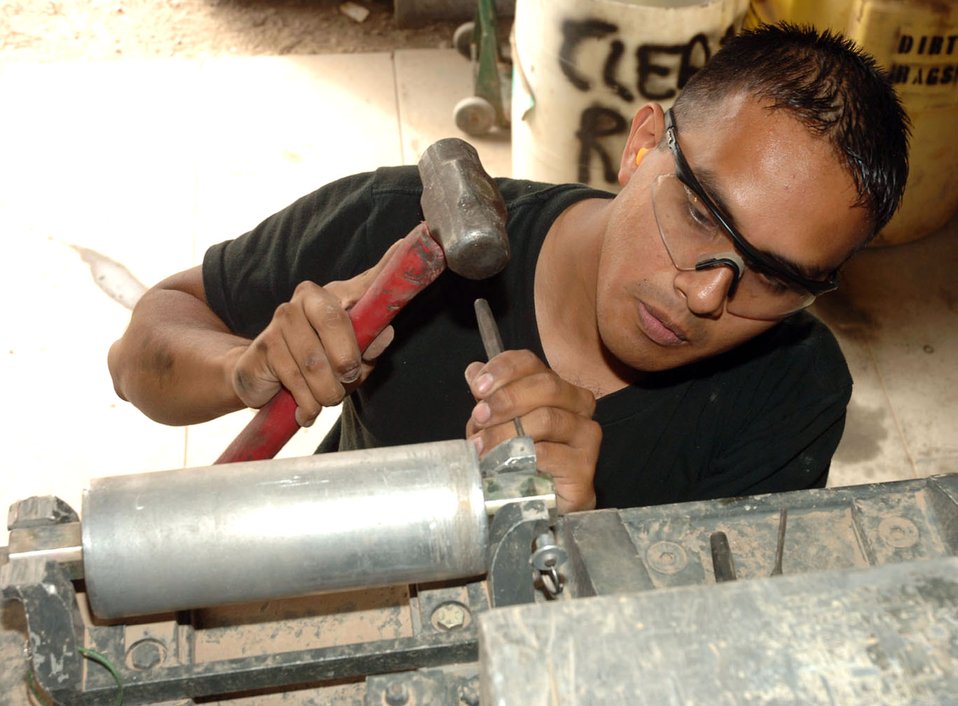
Mechanics keep fleet rolling through dust, mud

Senior Airman Jorge Chavez removes a roller on a K-loader at Sather Air Base, Iraq, on Monday, May 1, 2006. He is a mechanic with the 447th Expeditionary Logistics Readiness Squadron vehicle maintenance flight.